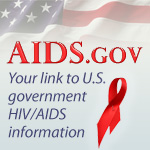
AIDS.gov logo